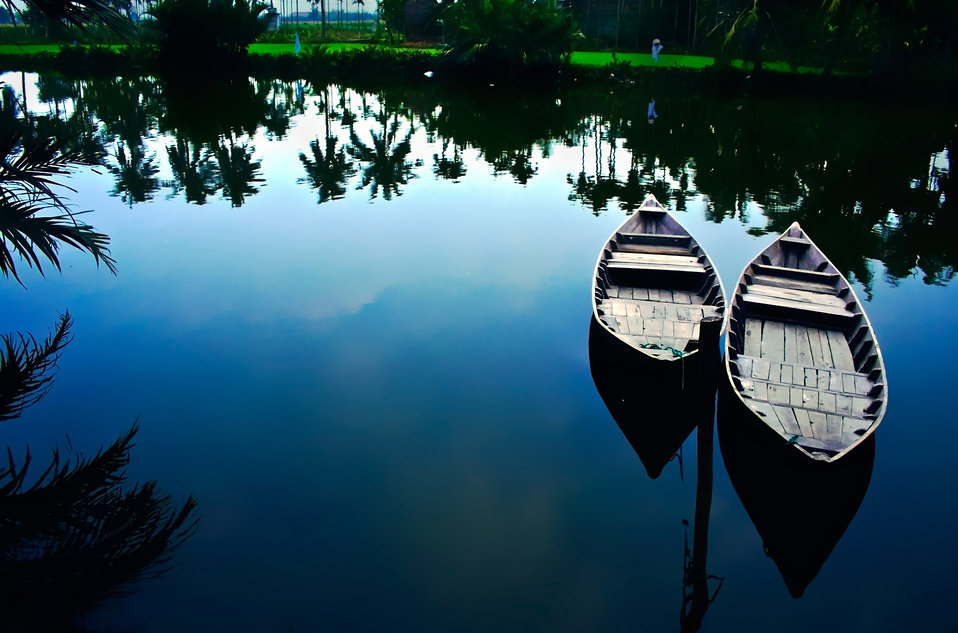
Quiet

In the hoai river, hoi an, vietnam.